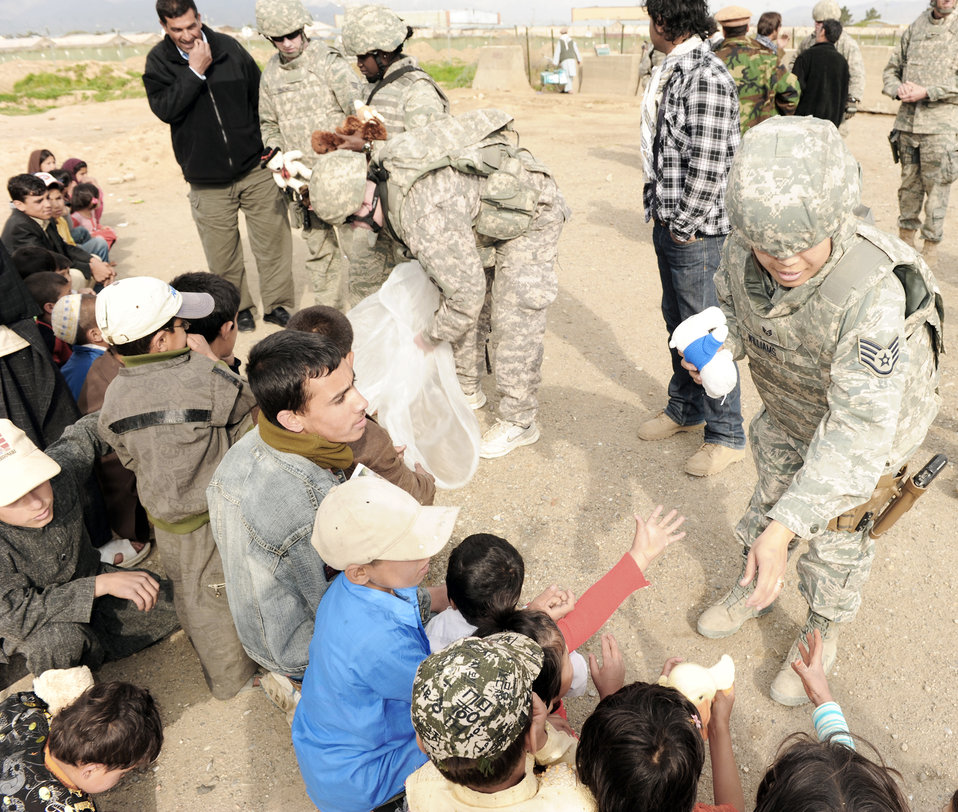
Operation Care

U.S. military members donate humanitarian aid to Afghan residents during a recent Operation Care humanitarian aid mission April 5, 2010, outside of Bagram Airfield, Afghanistan. The Operation Care team donated clothing, shoes and other items to residents in need.